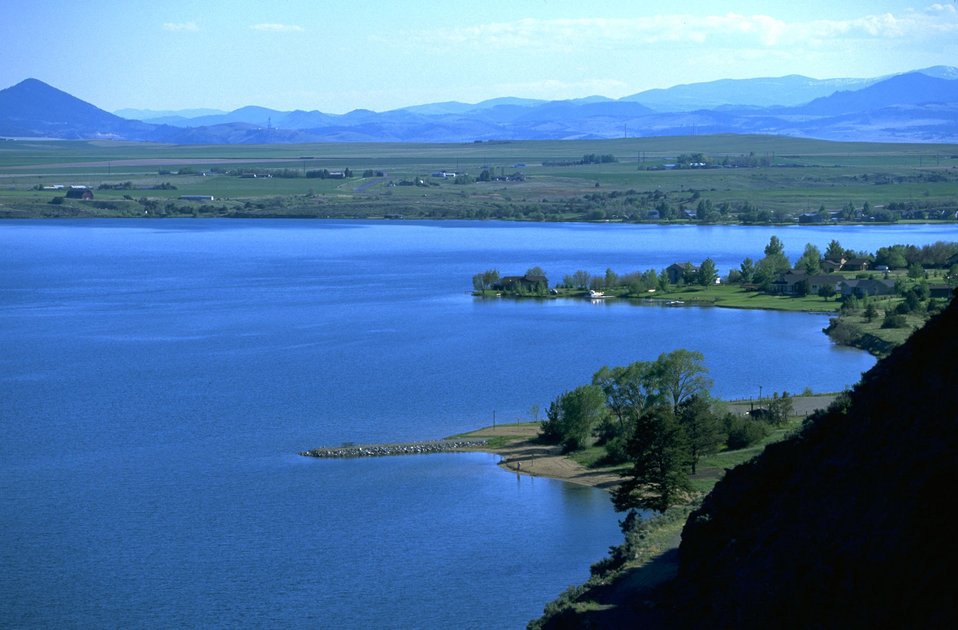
View of Clark's Bay Day Use Area and Hauser Lake